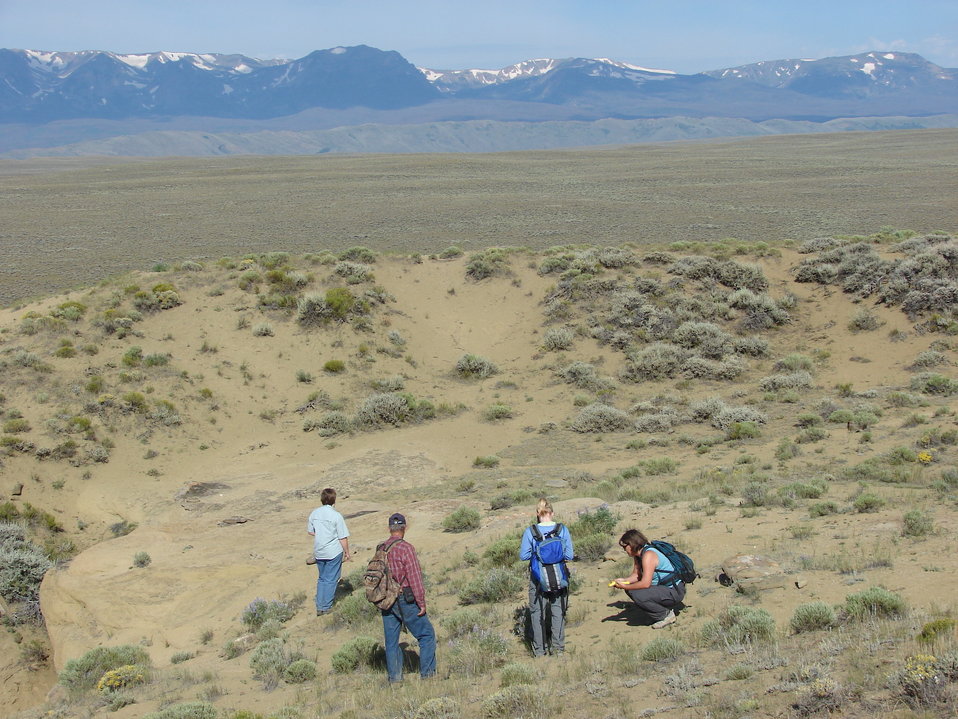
North Park Phacelia Genetic Sampling

North Park phacelia grows on barren sandy soils in North Park, Colorado near the town of Walden. In this photo, botanists are taking genetic samples of the species to analyze its genetic similarity to other Phacelia species in Colorado.

Photo credit: USFWS

...........................................................................

BACKGROUND:
North Park phacelia (Phacelia formosula) is a member of the waterleaf family (Hydrophyllaceae) is found in “North Park” of north central Colorado, near the small town of Walden. The bright purple flowers and lobed leaf margins make this species easy to spot in July and August. The plant is a biennial, surviving for one year as a rosette of leaves before flowering and dying the following year. The plant is found on barren exposures of the Coalmont Formation that are easily eroded (see the habitat pictures). Roughly 16,000 individuals are known from six separate populations and the entire species is known from an area measuring roughly 10 miles in either direction (north to south, east to west).

The species was discovered, at one location, in 1918 by the Colorado botanist, George Osterhout. Additional sites were not located until 1979. Because of the limited distribution, small population sizes and threats to the species, North Park phacelia was listed as endangered under the Endangered Species Act in 1982. Threats to the species today include: heavy livestock use, off-road vehicle traffic, oil and gas development, residential development, a lack of regulatory mechanisms, and potential effects from climate change.

Genetic and taxonomic research into the species’ relationships with close relatives in Larimer and Grand counties is underway. Further locations of these Phacelia are being sought to better understand these relationships.

Several populations of North park phacelia occur either partially or wholly on private and State lands. Conservation actions on these properties are voluntary. Funding is available to landowners wanting to conserve the species. Please contact Gina Glenne or Ellen Mayo at 970-243-2778 for further information on this species and ways that you can help with conservation and recovery.